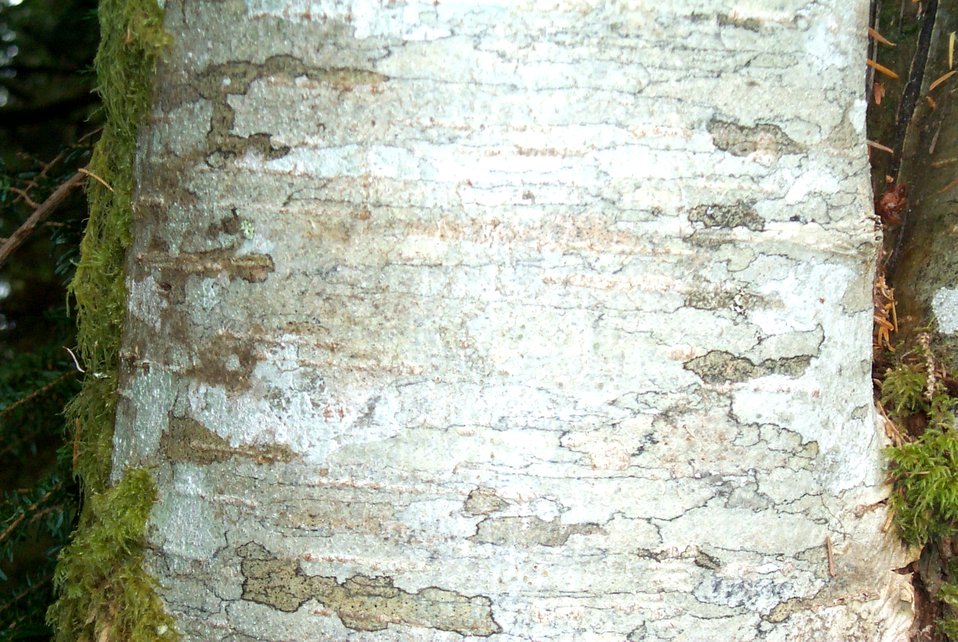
Eighteen-inch diameter alder tree